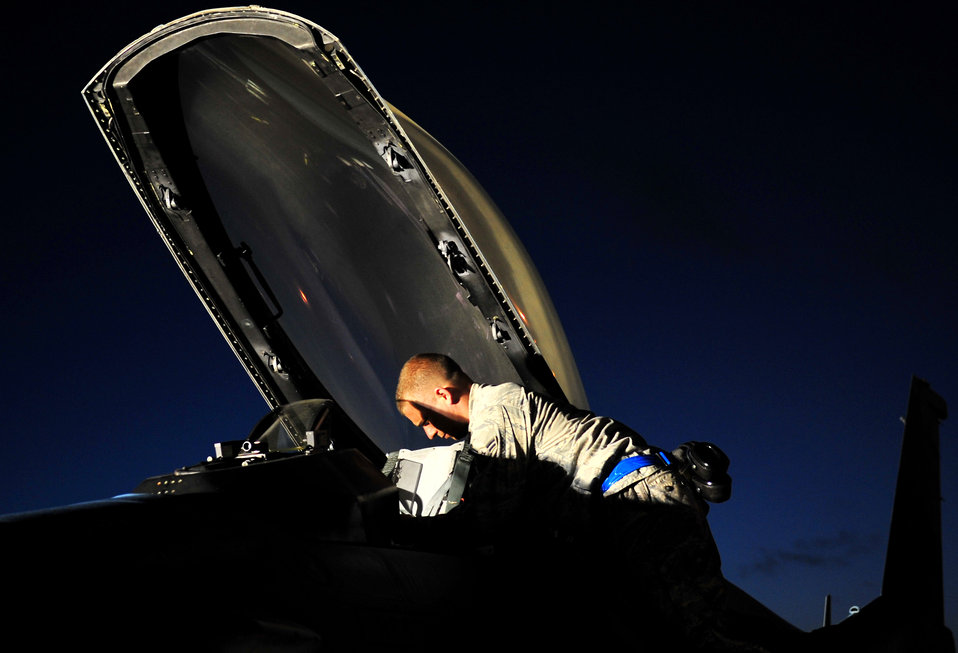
Joint Bilateral Training

Airman 1st Class Justin Hodge sets up an F-16 Fighting Falcon before he conducts walk around launch procedures with the pilot Feb. 25, 2010, at Kadena Air Base, Japan. The aircraft is from the 18th Aggressor Squadron at Eielson Air Force Base, Alaska, and was participating in joint bilateral training with other U.S. forces and the Japan Air Self Defense Force from Feb. 22 to 26. Airman Hodge is from the 354th Aircraft Maintenance Squadron at Eielson AFB.